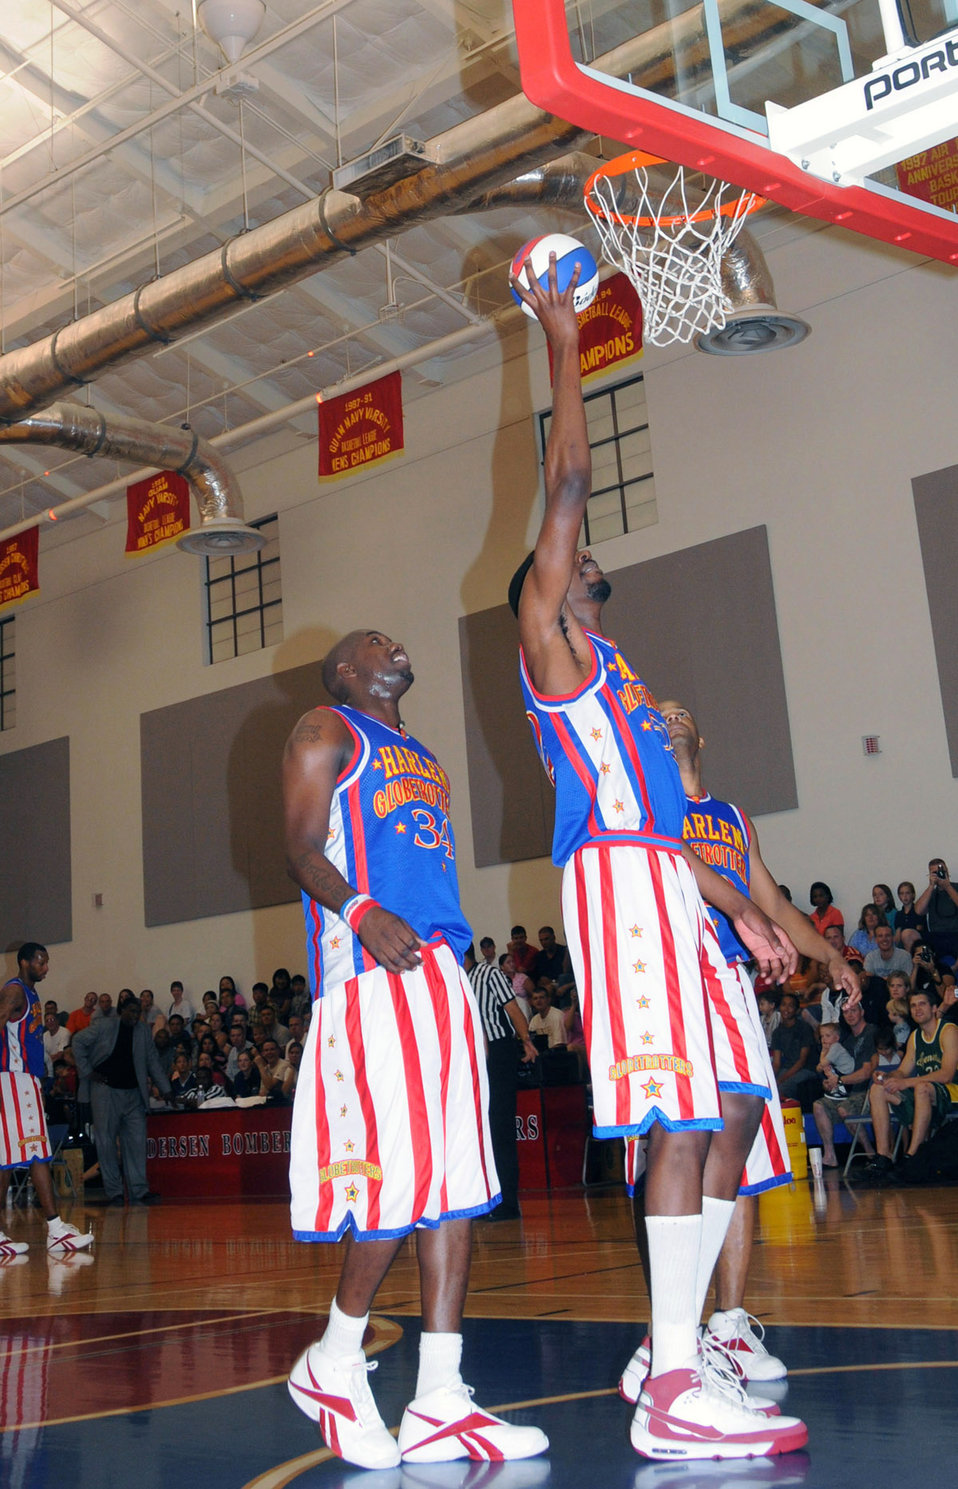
Harlem Globetrotters put on a show at Andersen

Shagari